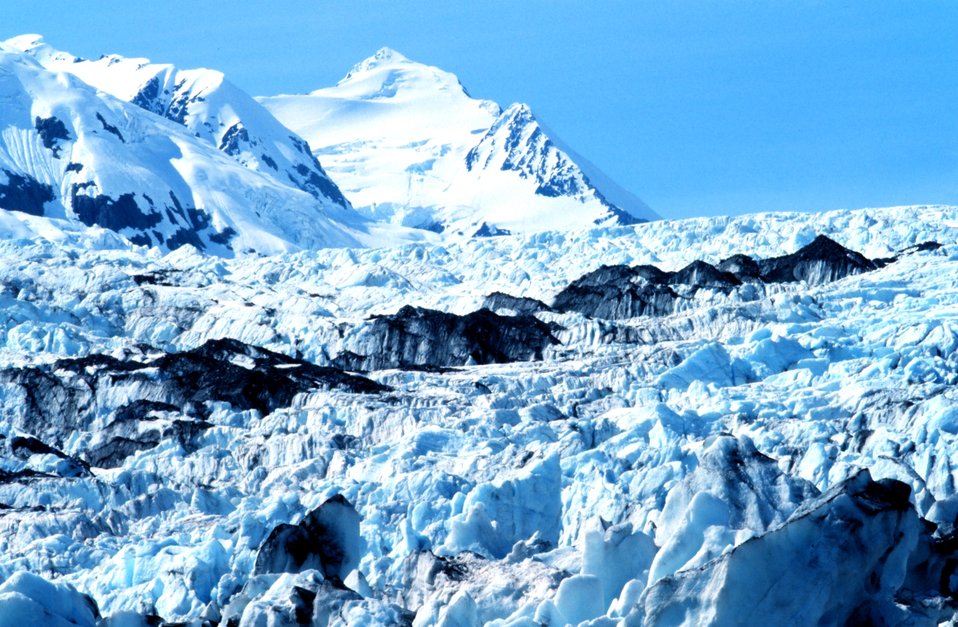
Glacier in Kenai Fjords